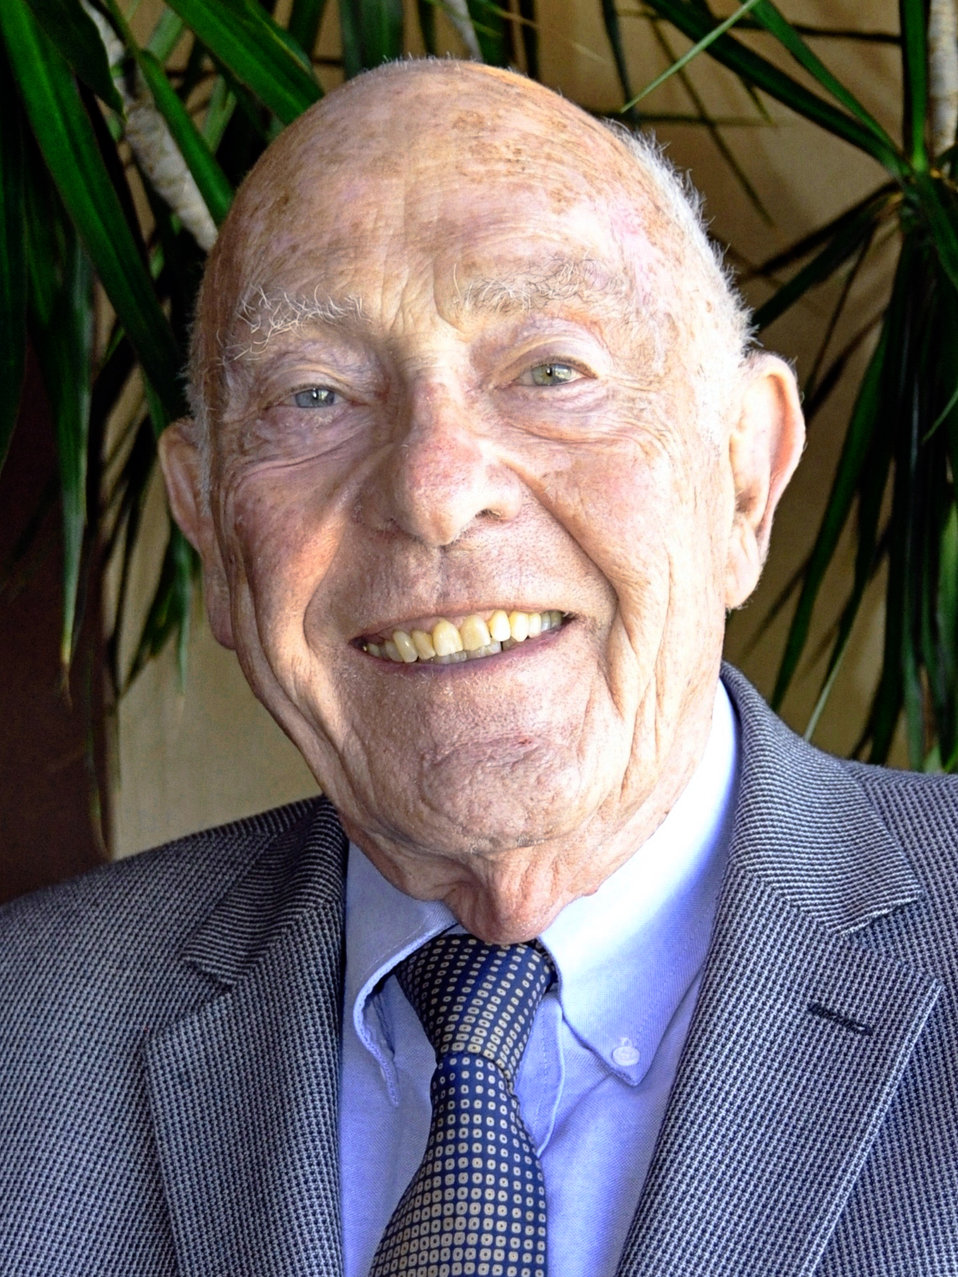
John Cahn

Credit: Inamori Foundation

See also
www.nist.gov/director/cahn-070611.cfm
www.nist.gov/public affairs/releases/kyoto-prize-062411.cfm